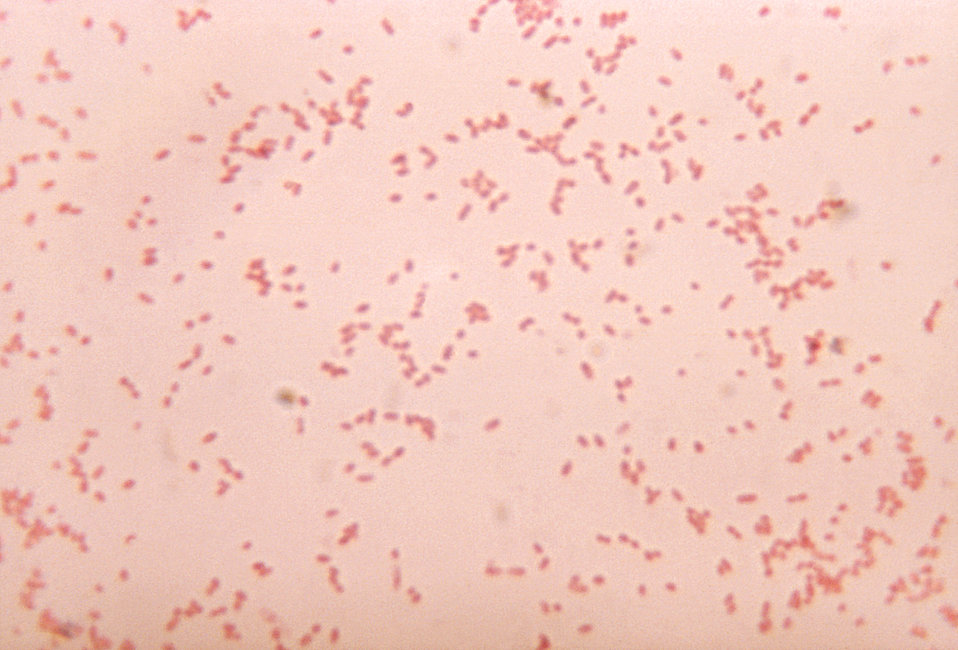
This photomicrograph shows Bacteroides fragilis subsp. distasonis cultured in a thioglycollate medium for 48 hours.